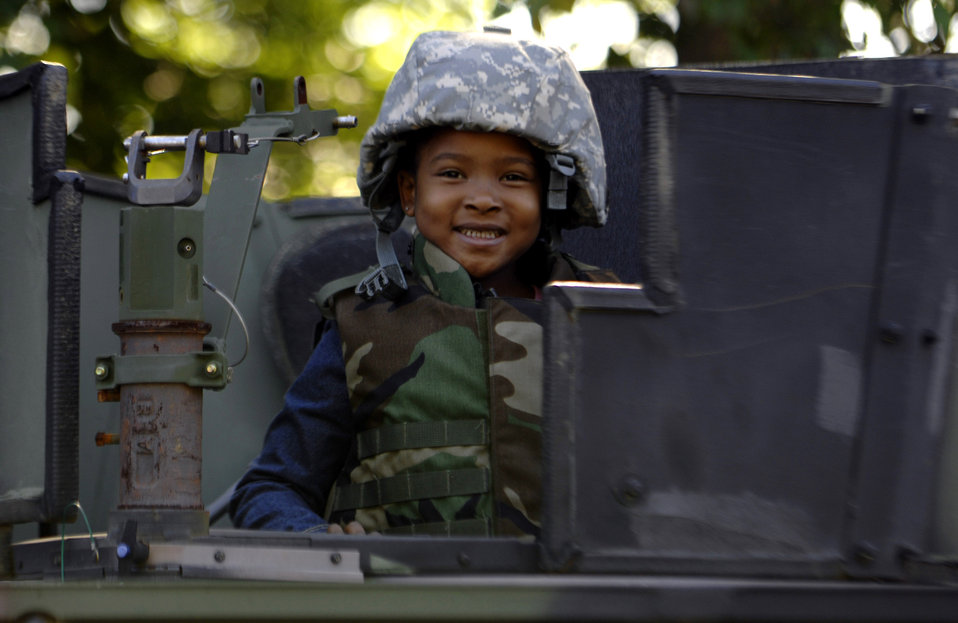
Like my Kevlar vest?

At a preschool in Temple Hills, Md., Kaithlyn Gibson, 6, sits in a Humvee Oct. 8 from Bolling Air Force Base, D.C. Members from the base's 11th Logistics Readiness Squadron brought the vehicle for the students to explore as part of the school's